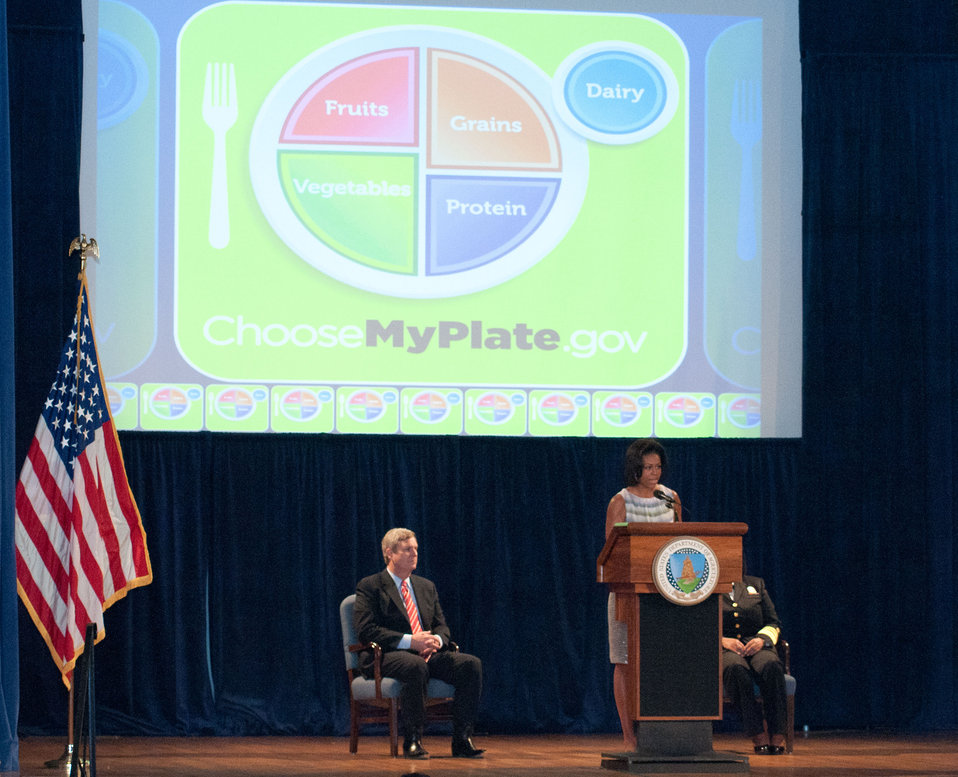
First Lady Michelle Obama talks about the new Food Icon MyPlate (L to R seated Agriculture Secretary Tom Vilsack and Surgeon General Regina Benjamin) on Thursday, Jun. 2, 2011 in the Jefferson Auditorium, U. S. Department of Agriculture (USDA). This new icon will replace the USDA’s MyPyramid image as the government’s primary food group symbol. MyPlate is an easy-to-understand visual cue to help consumers adopt healthy eating habits that are consistent with the 2010 Dietary Guidelines for Americans. MyPyramid will remain available to interested health professionals and nutrition educators in a special section of the new website.